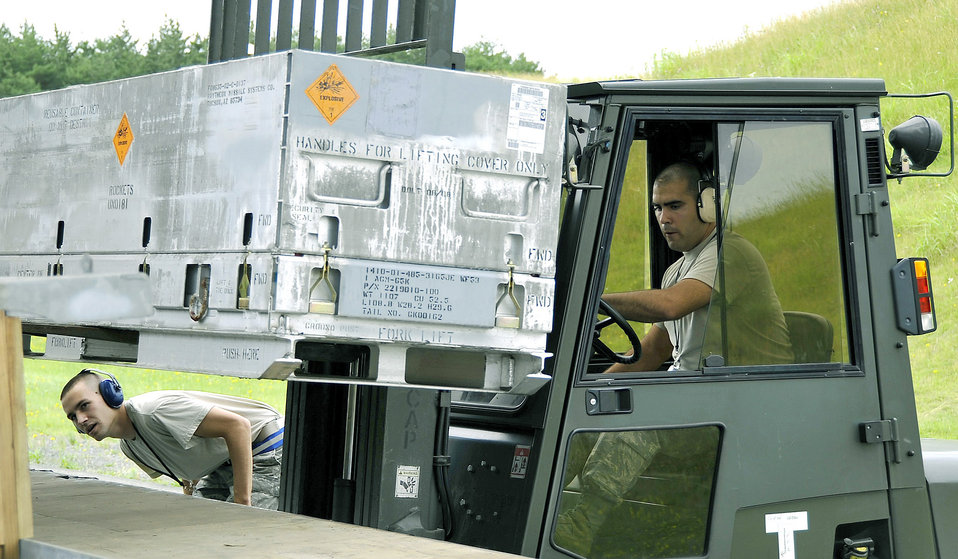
Munitions disposal

Airman Mason Hidde spots as Airman 1st Class Emanuel Sanchez loads munitions onto a flatbed truck July 13, 2010, at Misawa Air Base, Japan. Airmen there moved more than 700 tons of munitions in an effort to dispose of unserviceable and unused items. The Airmen are munitions systems specialists with the 35th Maintenance Squadron.